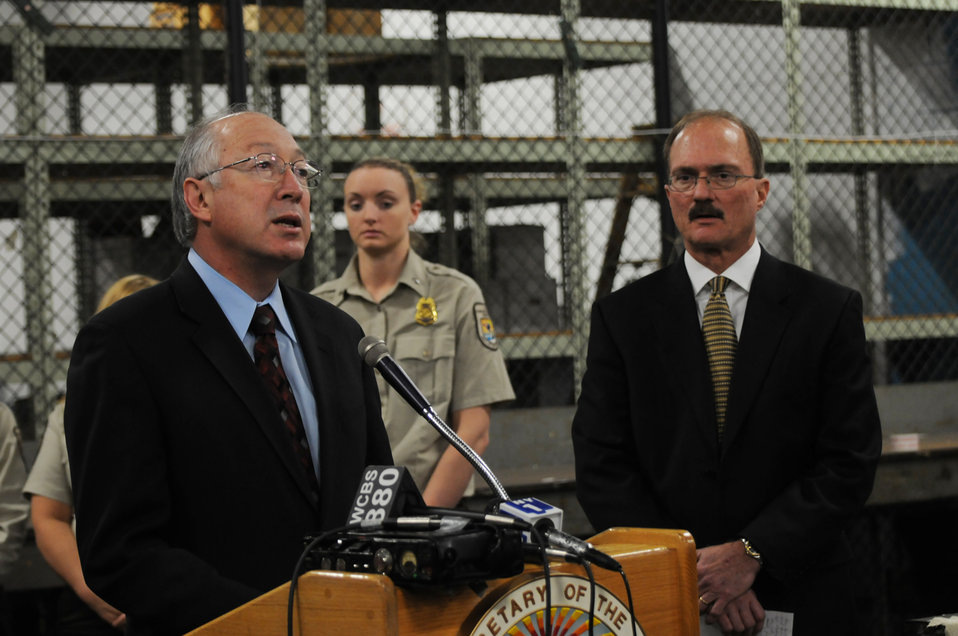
Secretary Salazar giving his speech

On January 20, Secretary of the Interior Ken Salazar visited the Port of New York to announce that the U.S. Fish and Wildlife Service will propose to list the Burmese python and eight other large constrictor snakes that threaten the Everglades and other sensitive ecosystems as “injurious wildlife” under the Lacey Act.